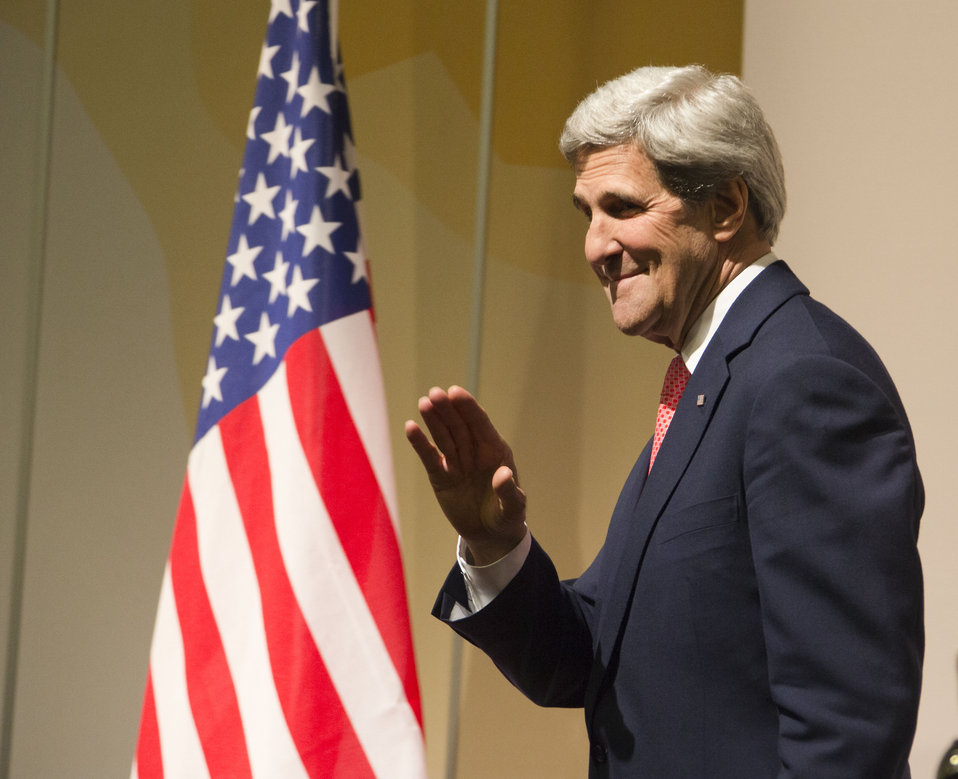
Secretary Kerry Speaks to the Media in Geneva, Switzerland

U.S. Secretary of State John Kerry waves during a news conference in Geneva, Switzerland, on November 24, 2013, after the P5 1 member nations concluded negotiations with Iran about its nuclear capabilities.